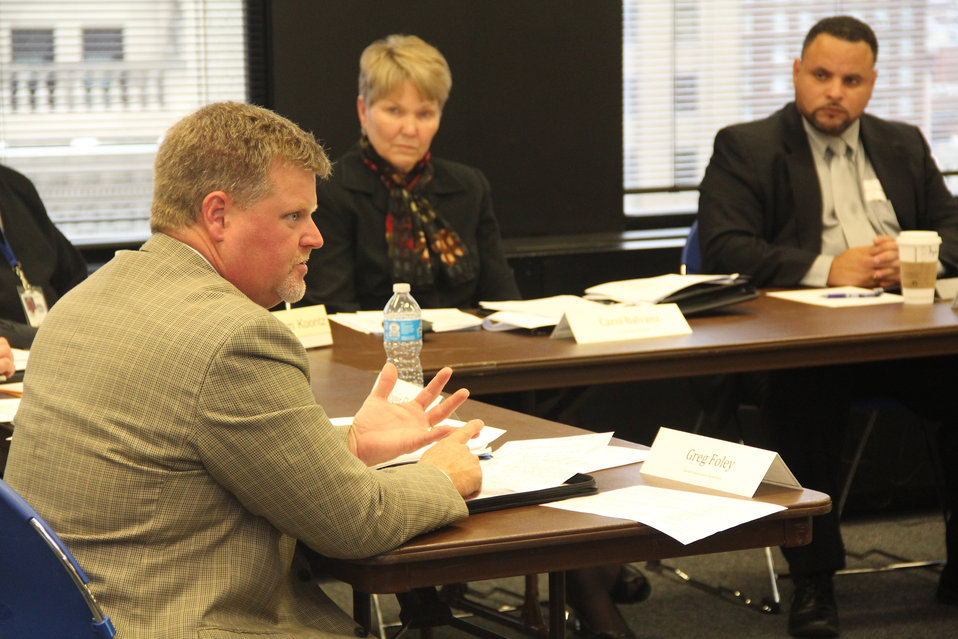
Kansas Department of Agriculture panelist Greg Foley speaks at a breakout session that looked at the drought’s impact on the crop industry at the Federal Drought Meeting in Omaha, NE on Tuesday, Oct. 9, 2012.